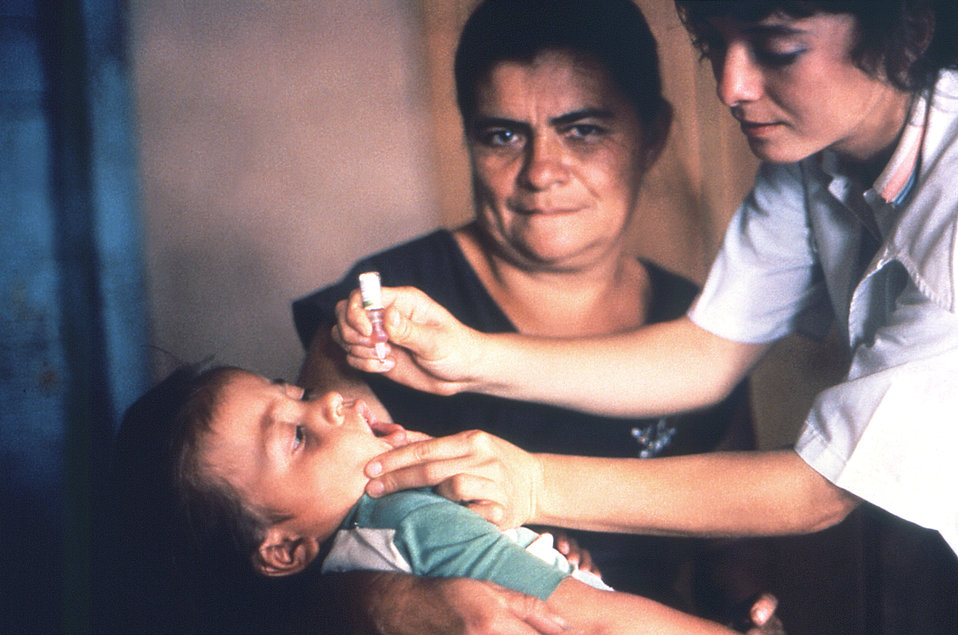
Here we see a mother cradling her child as he receives an oral polio vaccine, which will prevent her child from acquiring the highly-infectious disease poliomyelitis (polio), caused by a virus, i.e., poliovirus, that invades the nervous system.